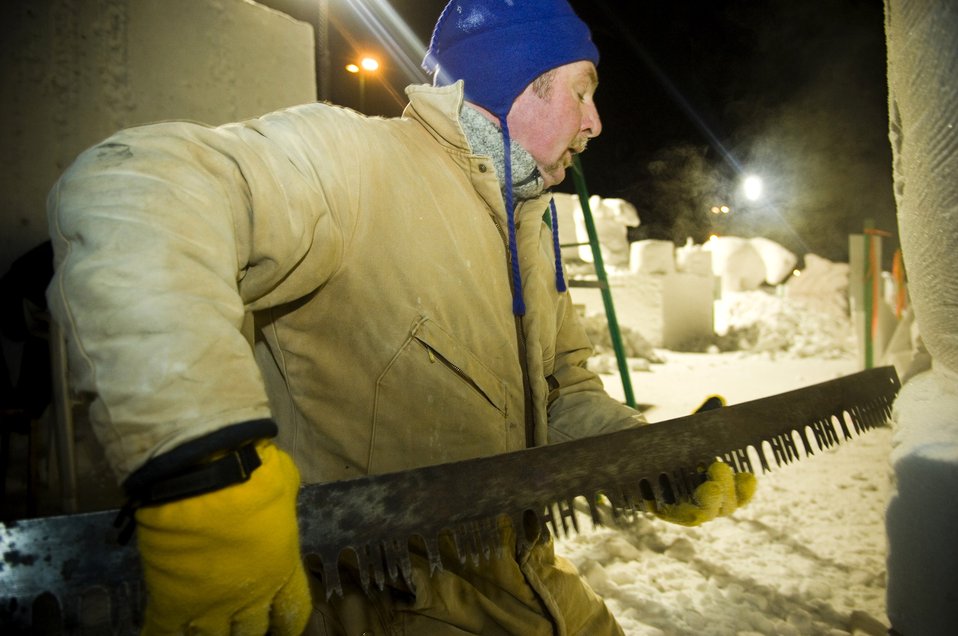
Elmendorf team perfects snow sculpting skills

Eric Zimmerman, a member of the three-man Elmendorf Air Force Base snow-sculpting team, uses a saw to carve a snow block for a pirate ship Feb. 23 during the Anchorage, Alaska, Fur Rendezvous snow sculpture competition. The team pushed through the exhaustion of freezing temperatures and long hours of labor to vie for a chance to be invited to the 2008 National Snow Sculpting Championship in Lake Geneva, Wis.